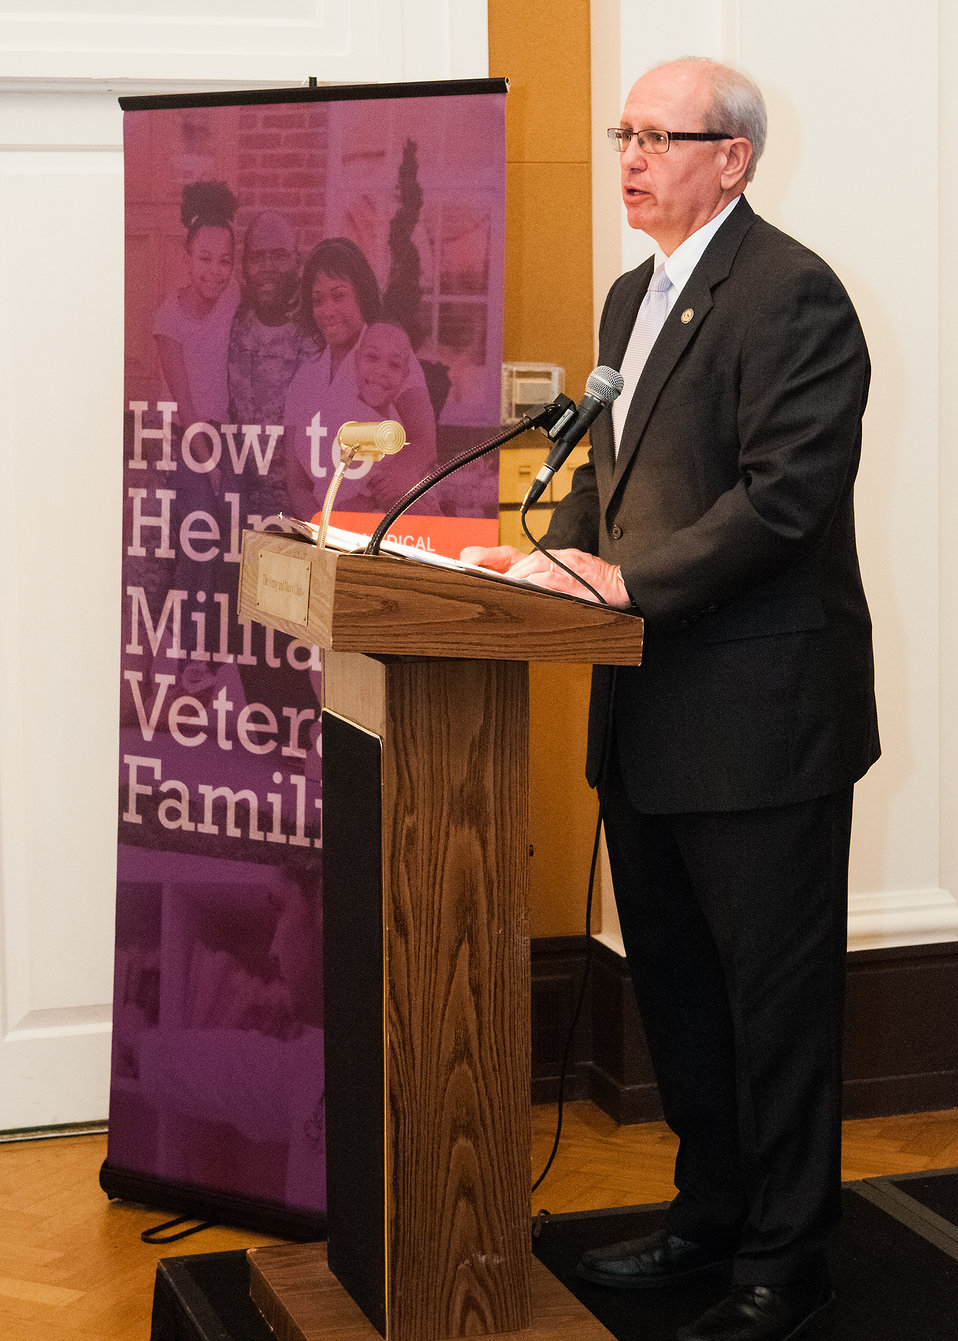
Dr. Jimmy Henning, Associate Dean and Director for University of Kentucky Cooperative Extension gave remarks at the United States Department of Agriculture (USDA) and Department of Defense (DOD) jointly launch event for the 'How to Help Military and Veteran Families' - a series of publications produced jointly by the USDA, National Institute of Food and Agriculture (NIFA) and DOD at the Army-Navy Club in Washington, DC, Monday, April 15, 2013.